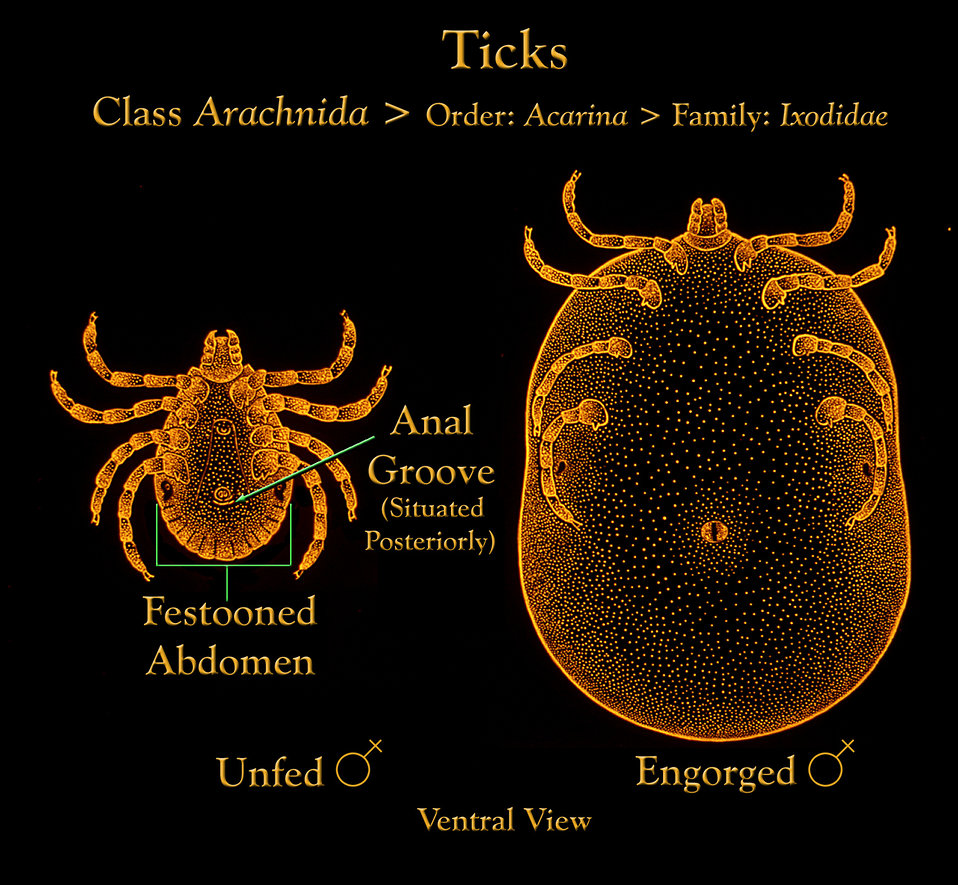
This drawing depicts two female Ixodidae hard ticks from the ventral perspective one unfed (Lt), and one engorged (Rt).